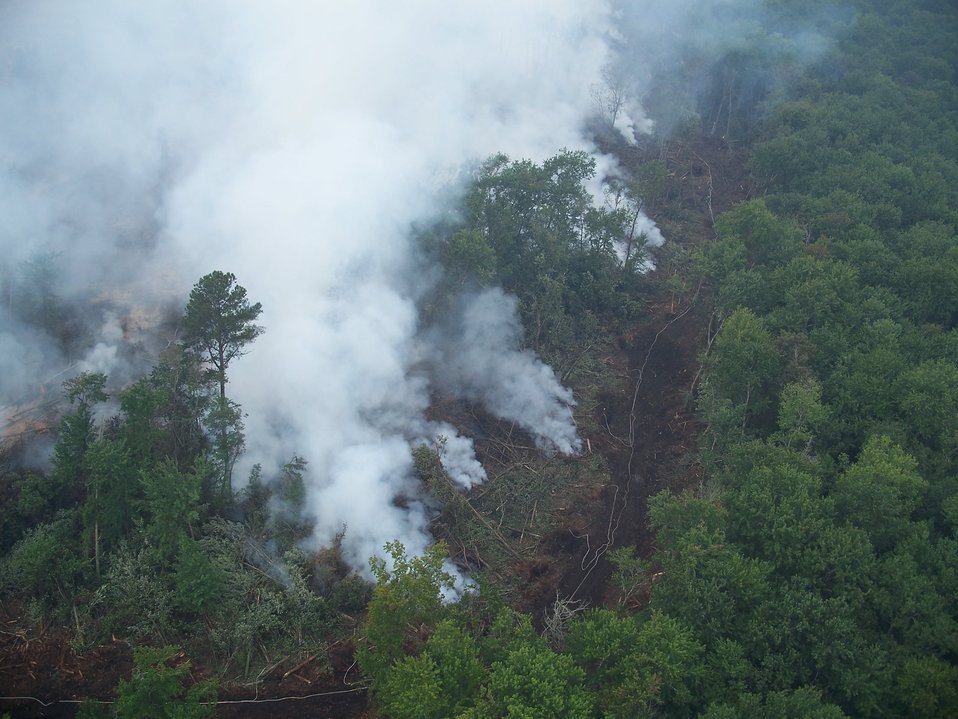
Fireline at Bull North

Suffolk, VA, August 2011: A fireline with hose lay surrounds the Bull North Spot Fire at the Lateral West Fire. The 43-acre Bull North Fire was among about 200 acres of the fire that burned on Dismal Swamp State Park. The remaining 6,000 acres burned on Great Dismal Swamp National Wildlife Refuge.